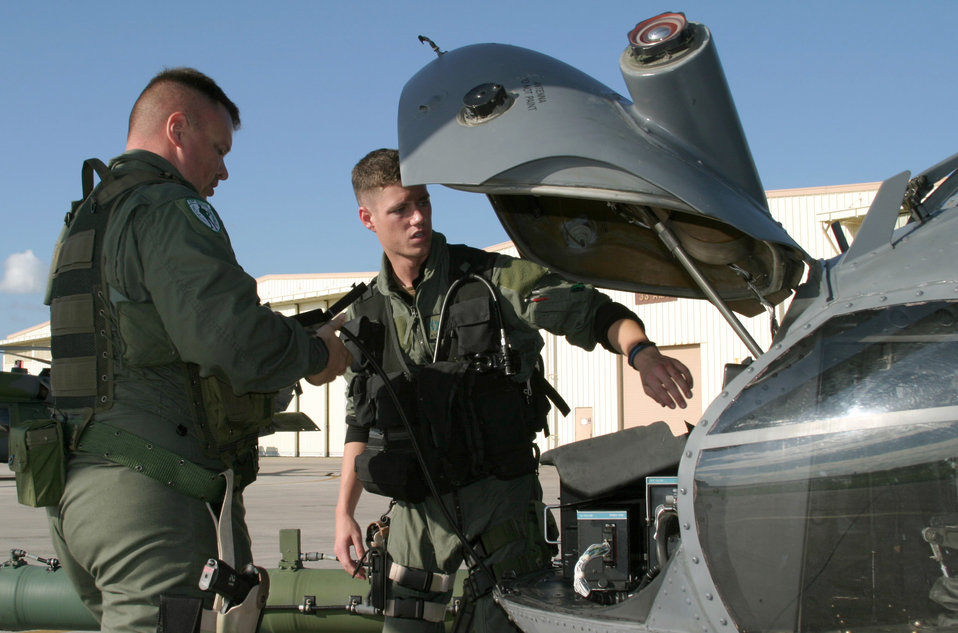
Kadena Airmen deploy to Philippines

KADENA AIR BASE, Japan -- Staff Sgt. Phil Calkins (left) and Airman 1st Class Jeff Layton, 33rd Rescue Squadron aerial gunners, prepare radios on a HH-60 Pave Hawk helicopter Dec. 9. Three HH-60s from the 33rd RQS, two MC-130 Combat Shadows from the 353rd Special Operations Group and a 909th Air Refueling Squadron KC-135 Stratotanker launched from here to provide humanitarian assistance to nearly 170,000 people from the Philippines displaced by Typhoon Nanmadol.